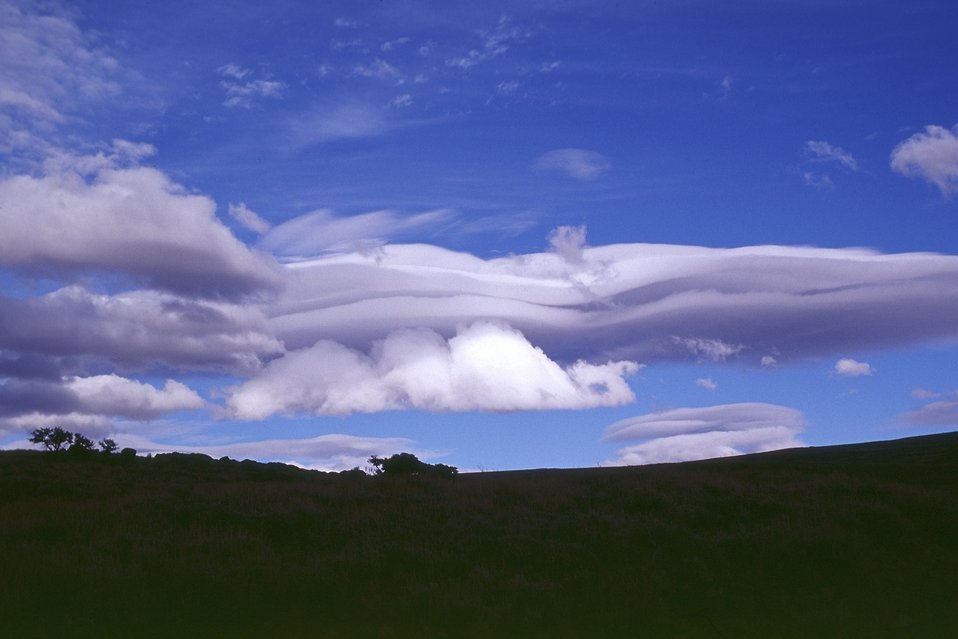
Clouds above Steen's Mountain near Jackman Ridge.